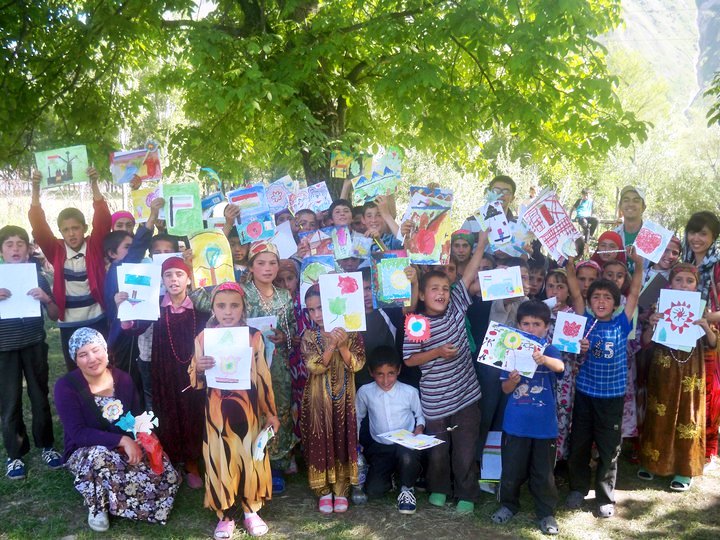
Tajik youth display their artwork at Camp America, a U.S. Embassy Dushanbe-supported summer camp, in Hoyt, Tajikistan, in July 2010.